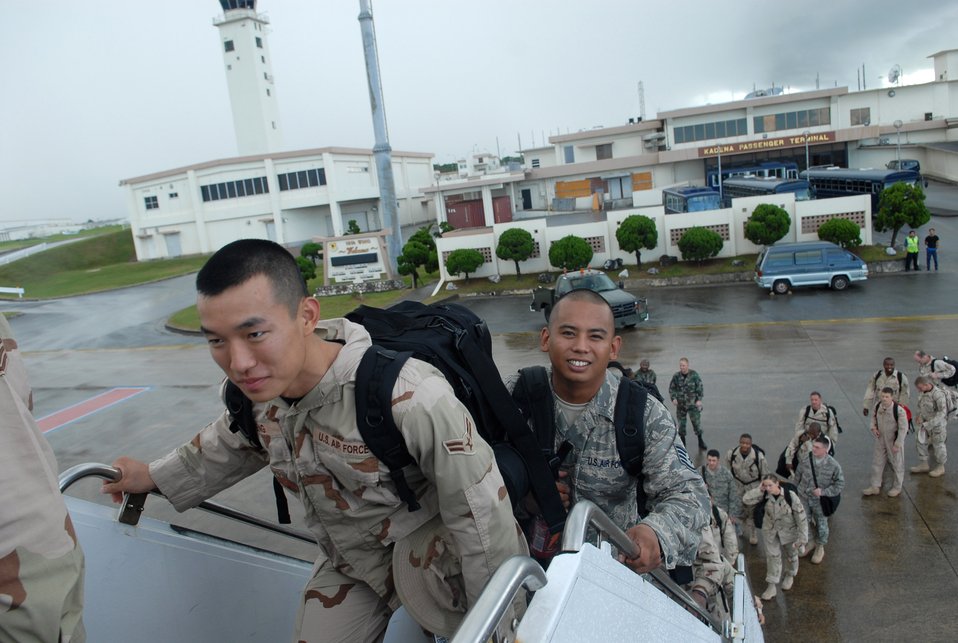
Airmen deploy from 7 Pacific bases

Airman 1st Class David Zheng and Staff Sgt. Joshua Garcia board a contract aircraft Sept. 2 at Kadena Air Base, Japan. More than 240 Airmen from seven Pacific Air Forces bases left Kadena AB for Southwest Asia to support operations Iraqi Freedom and Enduring Freedom. Both Airmen are assigned to 18th Wing Public Affairs.